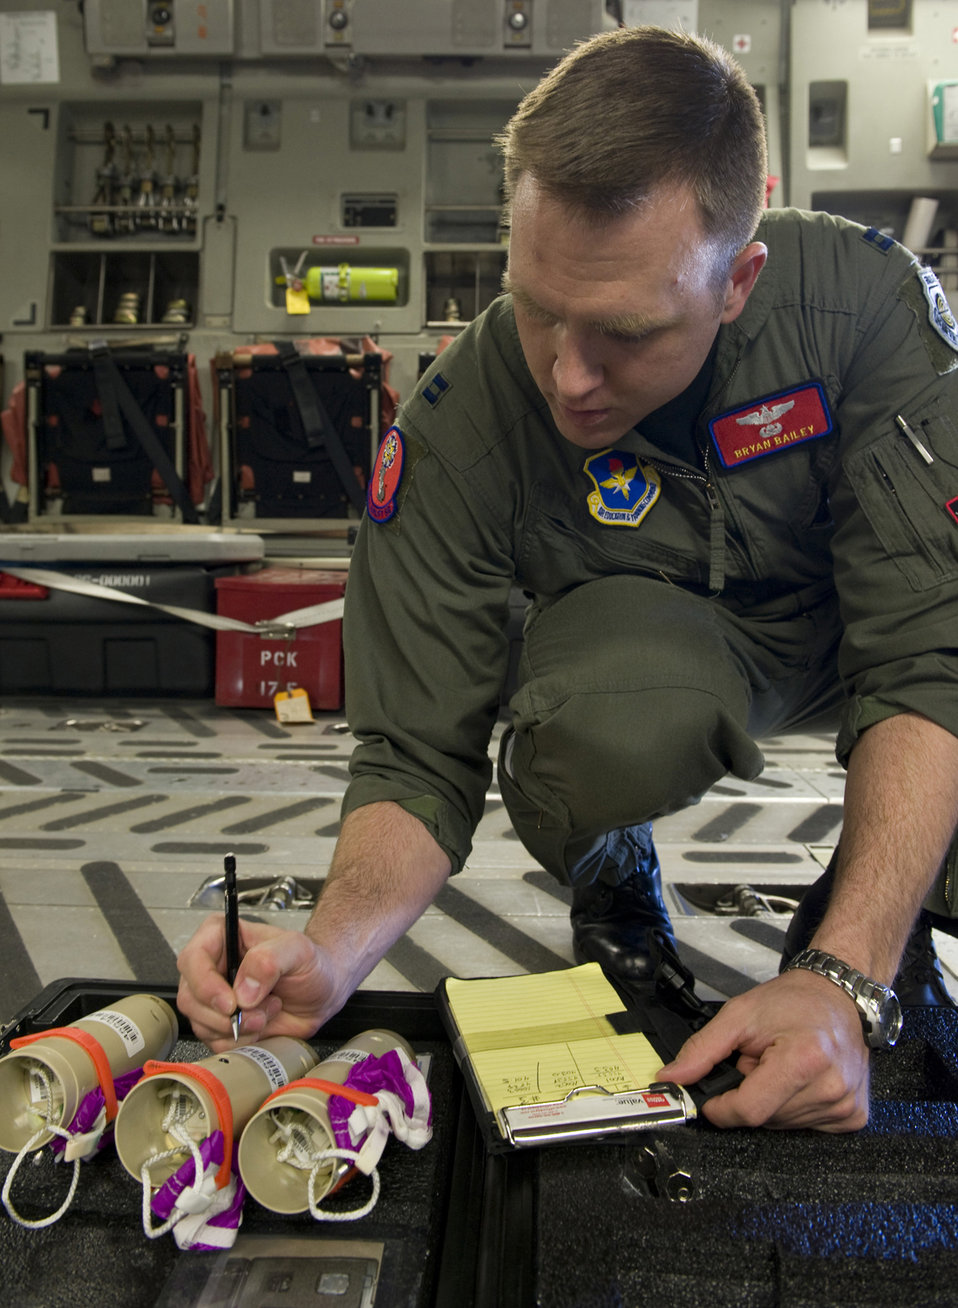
Aipdrop training coming to Altus AFB

Capt. Bryan Bailey verifies serial numbers and frequencies on drop sondes March 18, 2010, at Altus Air Force Base, Okla. Captain Bailey is a weapons officer with the 58th Airlift Squadron.